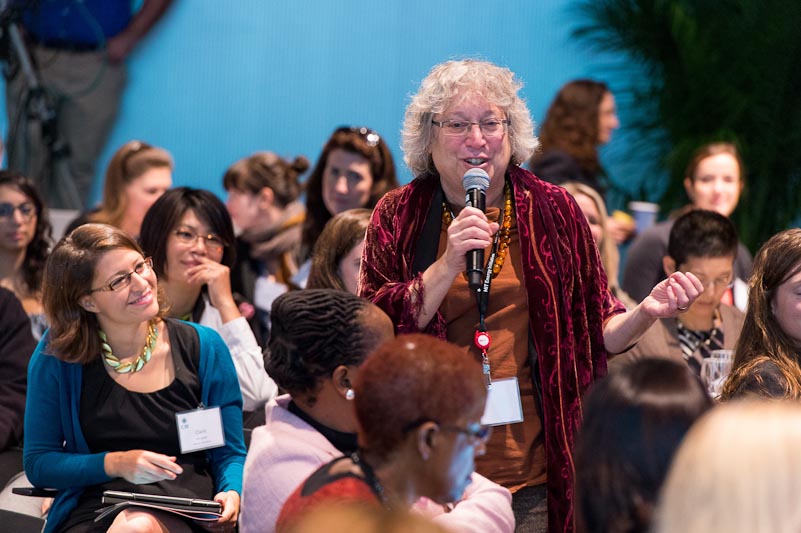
QandA at Women in Clean Energy Symposium